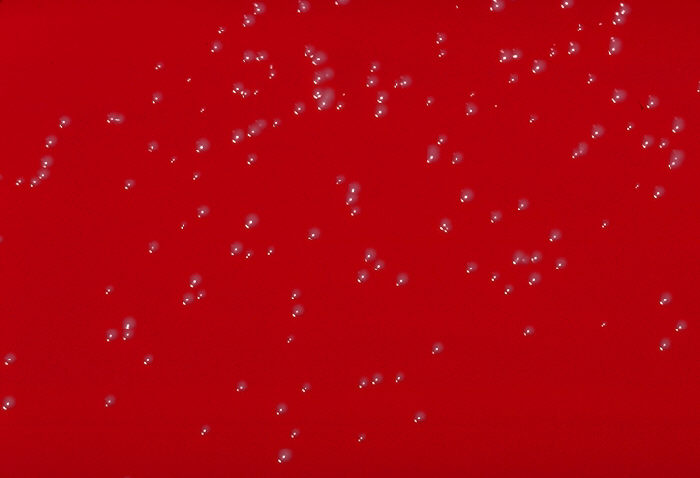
Blood agar plate culture of Corynebacterium pseudodiphtheriticum.